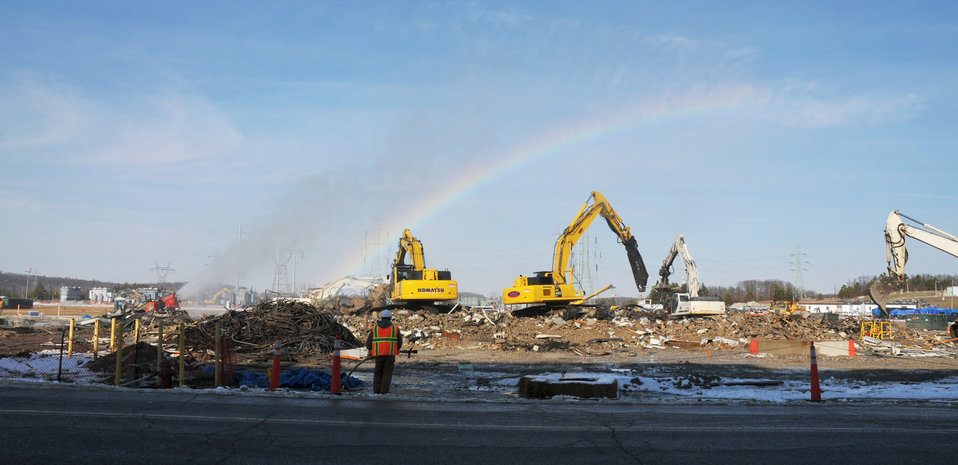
Portsmouth Skyline Changes with Completion of Recovery Act Projects

Recovery Act workers demolished a cooling tower complex and nearby electrical switchyard that together spanned more than 40 acres on the northeastern portion of the Portsmouth Gaseous Diffusion Plant.